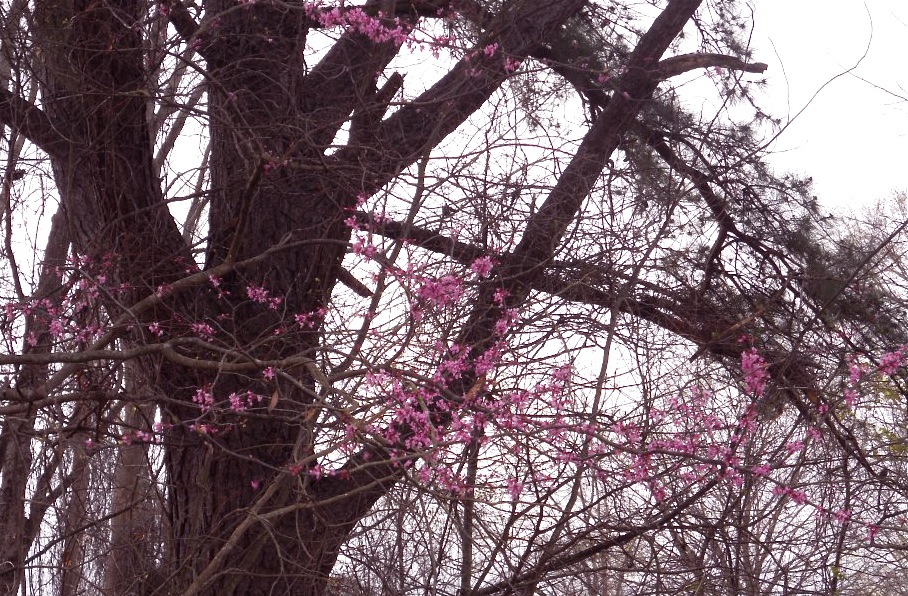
redbuds are in bloom ...

... on March 1, 2012 at Eufala National Wildlife Refuge in AL. The redbuds' bloom is a favorite sign of spring throughout the Southeast Region.